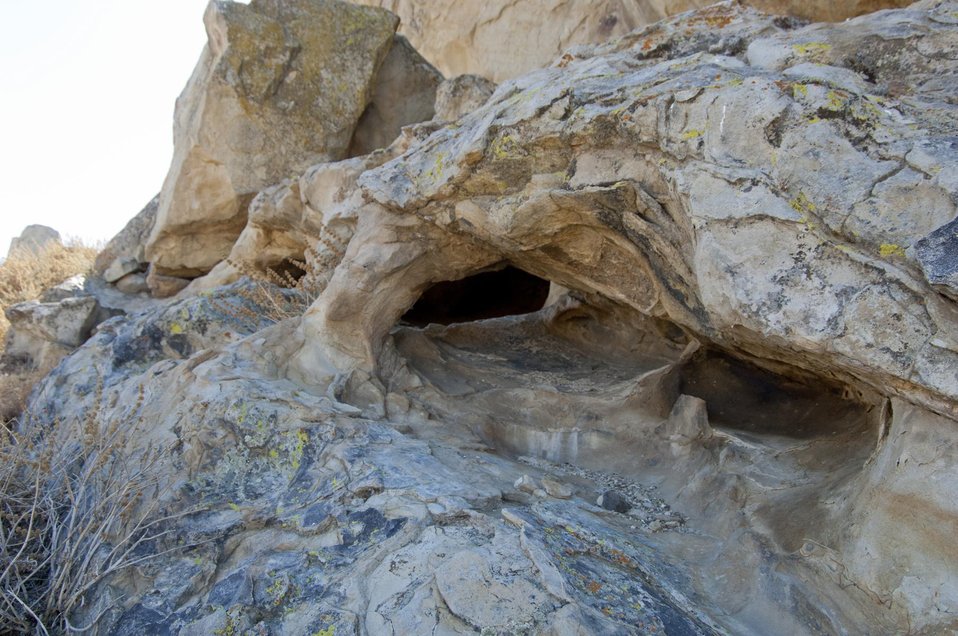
Painted Rock, Formation on the Carrizo Plain 5